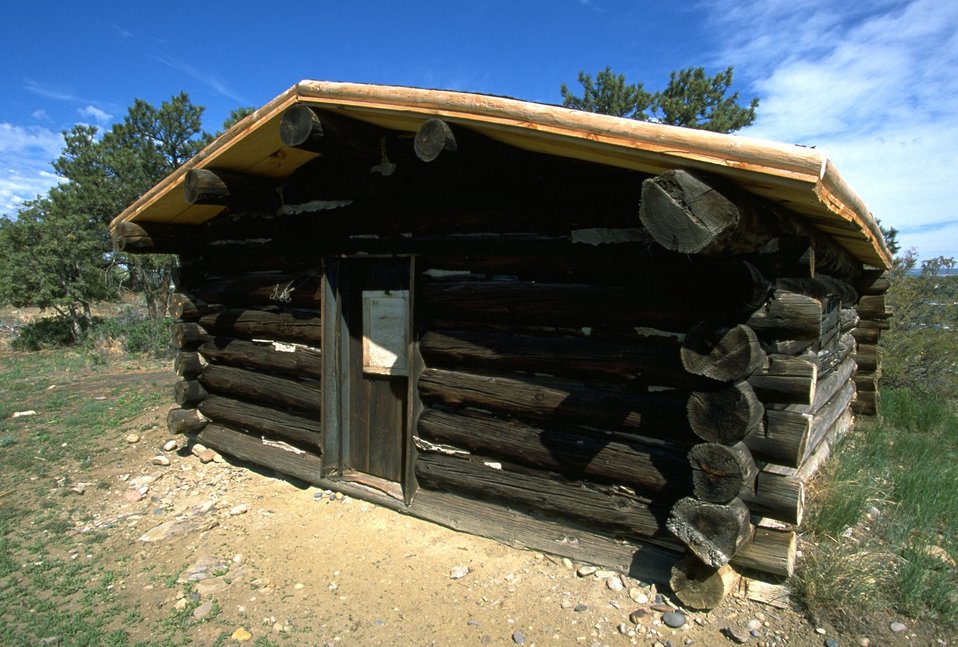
The Will James log cabin in the Four Dances Natural Area